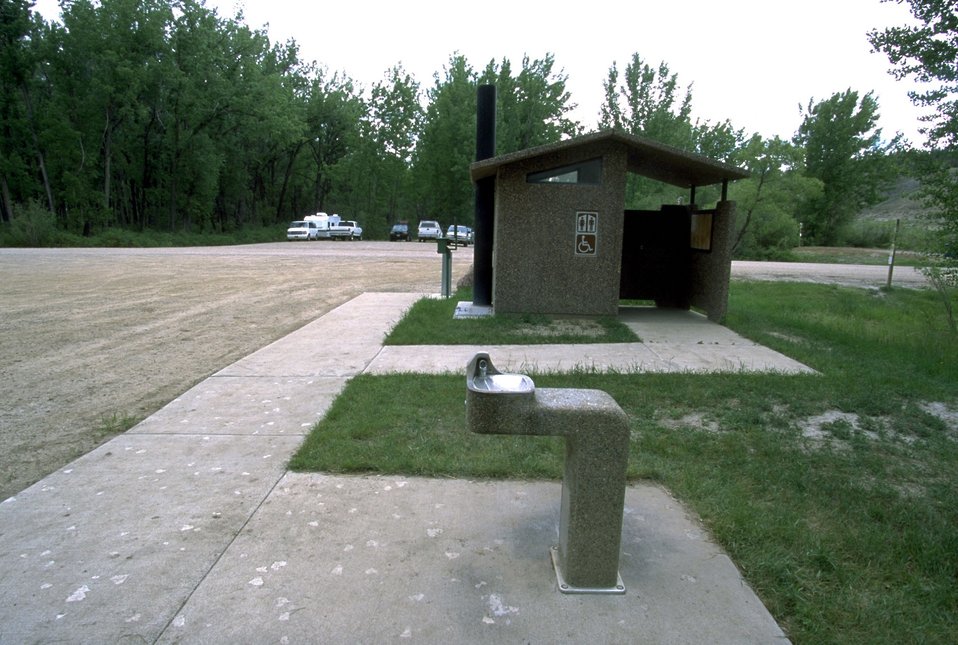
Drinking Fountain, outhouse and parking lot at Kipp Recreation Site